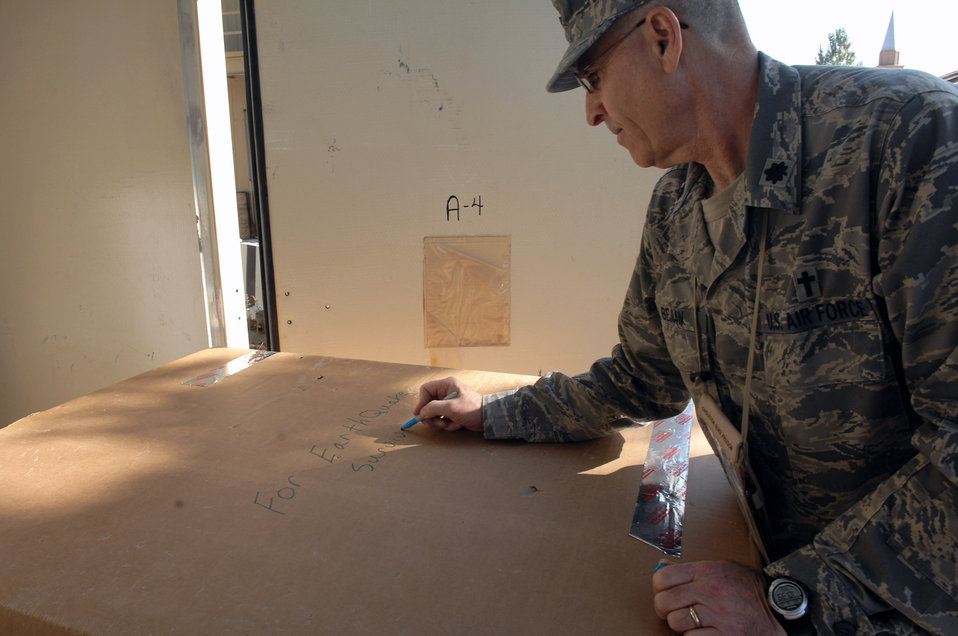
Manas Air Base provides aid to earthquake victims

Lt. Col. Tim Bejian writes a message on a box of humanitarian aid intended for survivors of an Oct. 5 earthquake in southern Kyrgyzstan. Airmen from Manas Air Base, Kyrgyzstan, sent a flatbed truck of aid, Oct. 8, that included pallets of food rations, bottled water, surplus military cold weather gear and more than 120 boxes containing 3,000 pounds of adult and children's winter clothing, blankets and toys. A call for personal donations resulted in more than 40 Airmen donating their own blankets they deployed here with. Colonel Bejian is the 376th Air Expeditionary Wing chaplain.